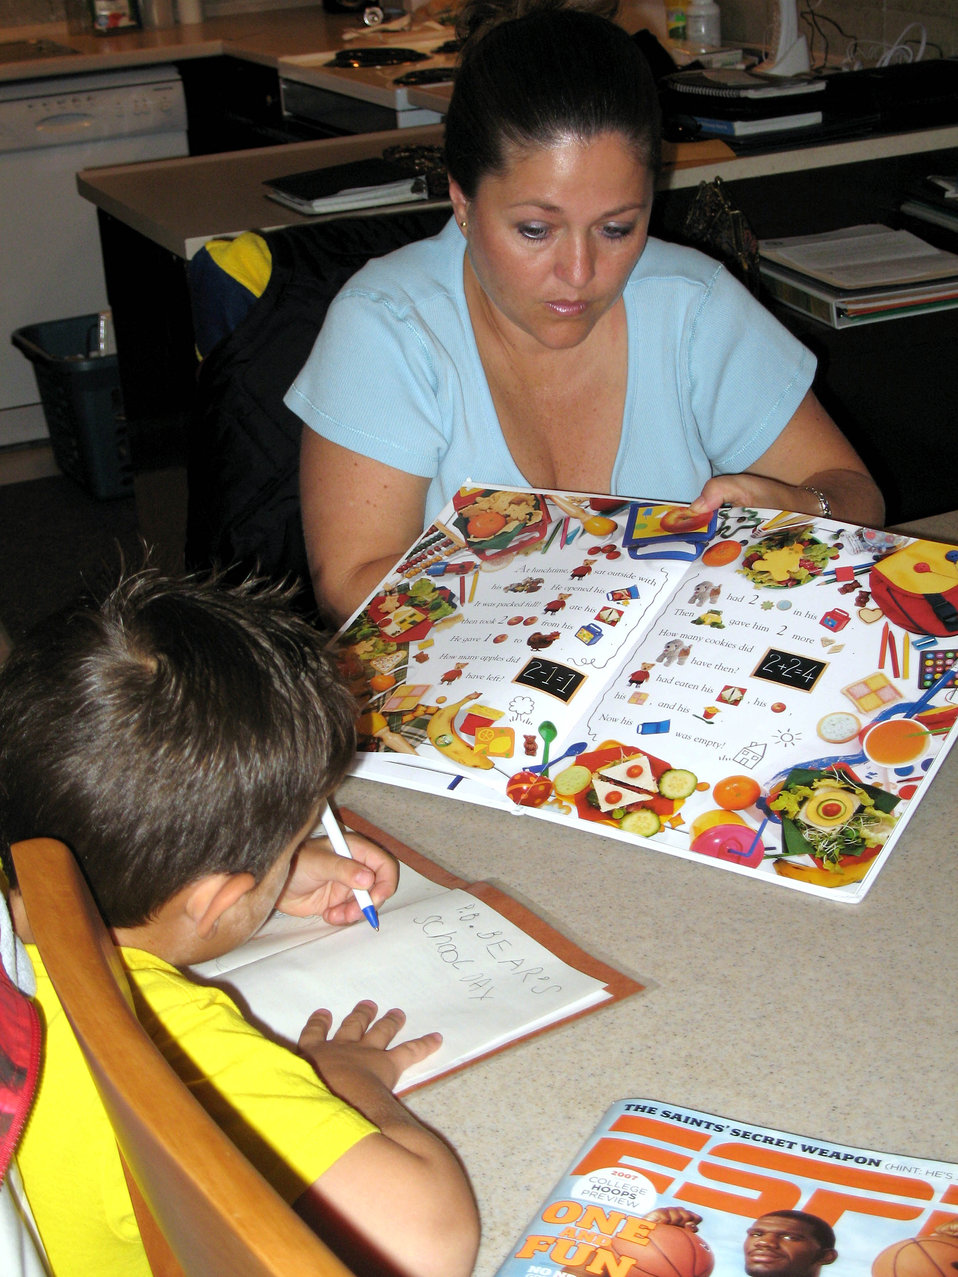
Life at Incirlik means getting involved

Brandi Ruiz, wife of Senior Master Sgt. Raul Ruiz, helps her son, Christian, with his homework. The Ruiz family says it is very important to get involved with the base community and have done so at Incirlik Air Base, Turkey. Sergeant Ruiz is the first sergeant for the 39th Security Forces Squadron there.